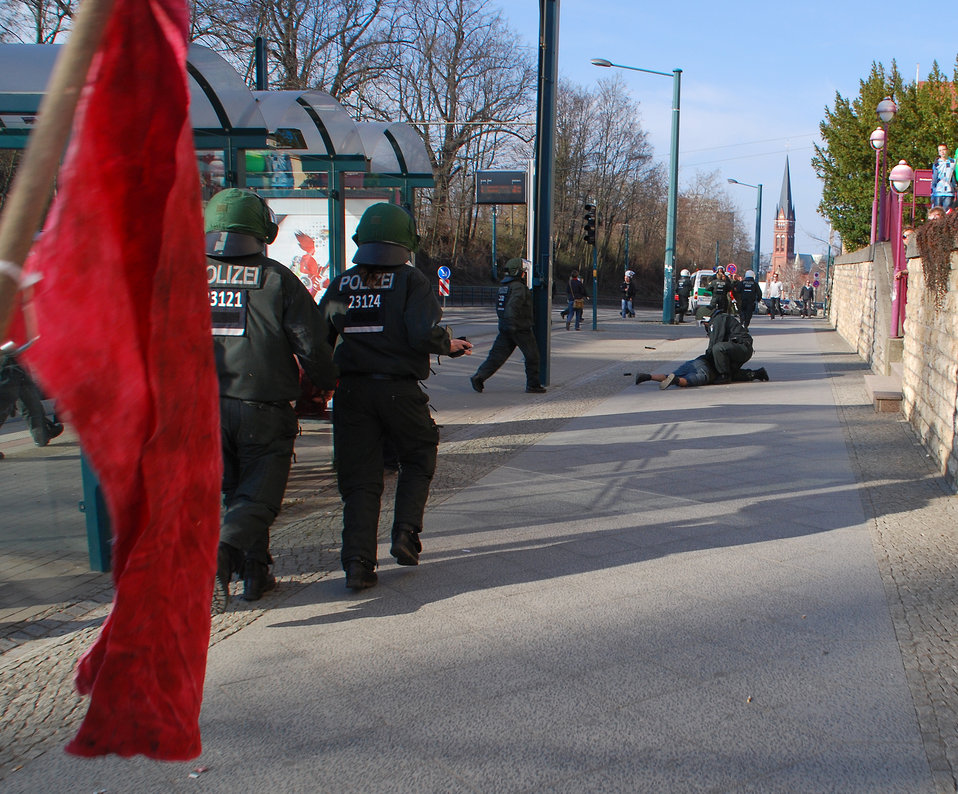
Proteste gegen den Nazi-Aufmarsch am 24.3.2012 in Frankfurt (Oder)